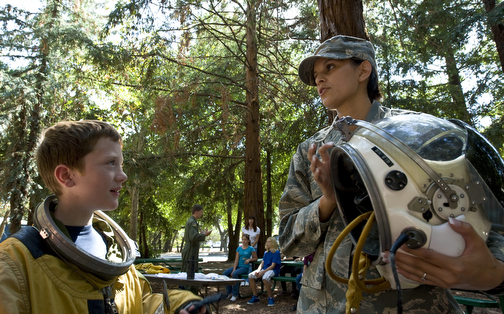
Air Force Week-Sacramento

Senior Airman Natalie Valle gives Noah Davis, 9, a hands-on opportunity with the aircraft's suit and helmet during aerospace career day at Discovery Museum of Sacramento for Air Force Week, Sept. 10, 2009. Air Force Week-Sacramento is an event using various activities and exhibitions to educate the community about the Air Force's capabilities and missions. Senior Airman Valle is a suit technician for the U-2 high-altitude reconnaissance aircraft and a member of the 9th Physiological Support Squadron at Beale Air Force Base, Calif.